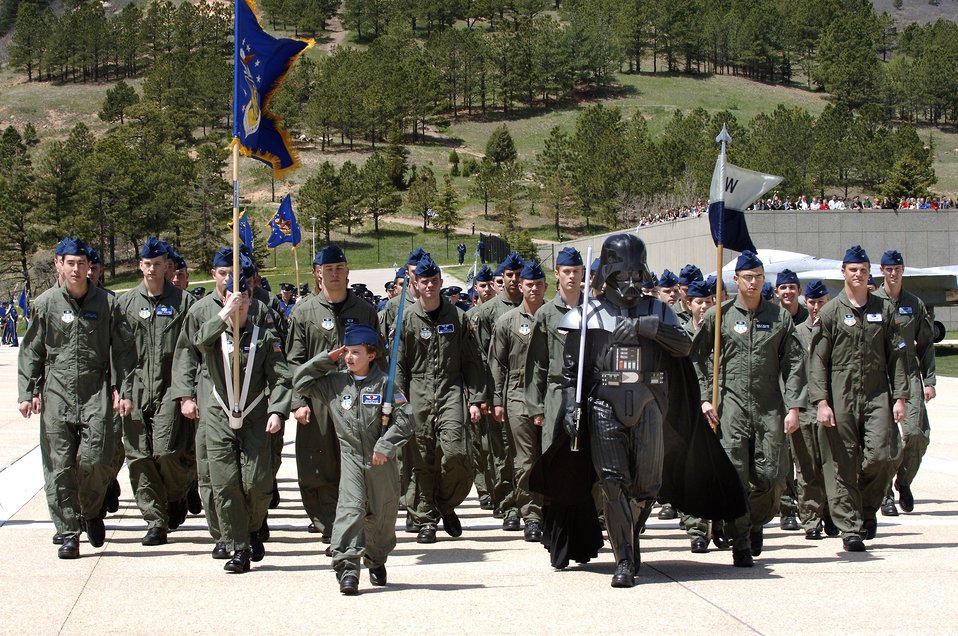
Cadet for a day

Ten-year-old Julian Willis and a special visitor lead Cadet Squadron 39 during a formation at the U.S. Air Force Academy, Colo. The Make-a-Wish Foundation and the Air Force Academy made Julian a